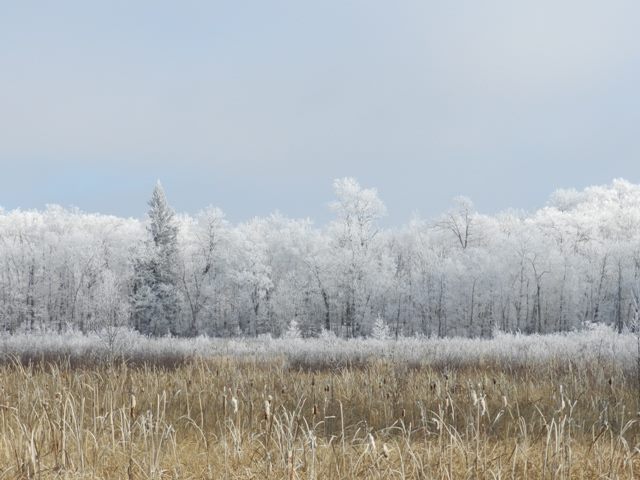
Tamarac Refuge

Frost coats the trees in Minnesota refuge.